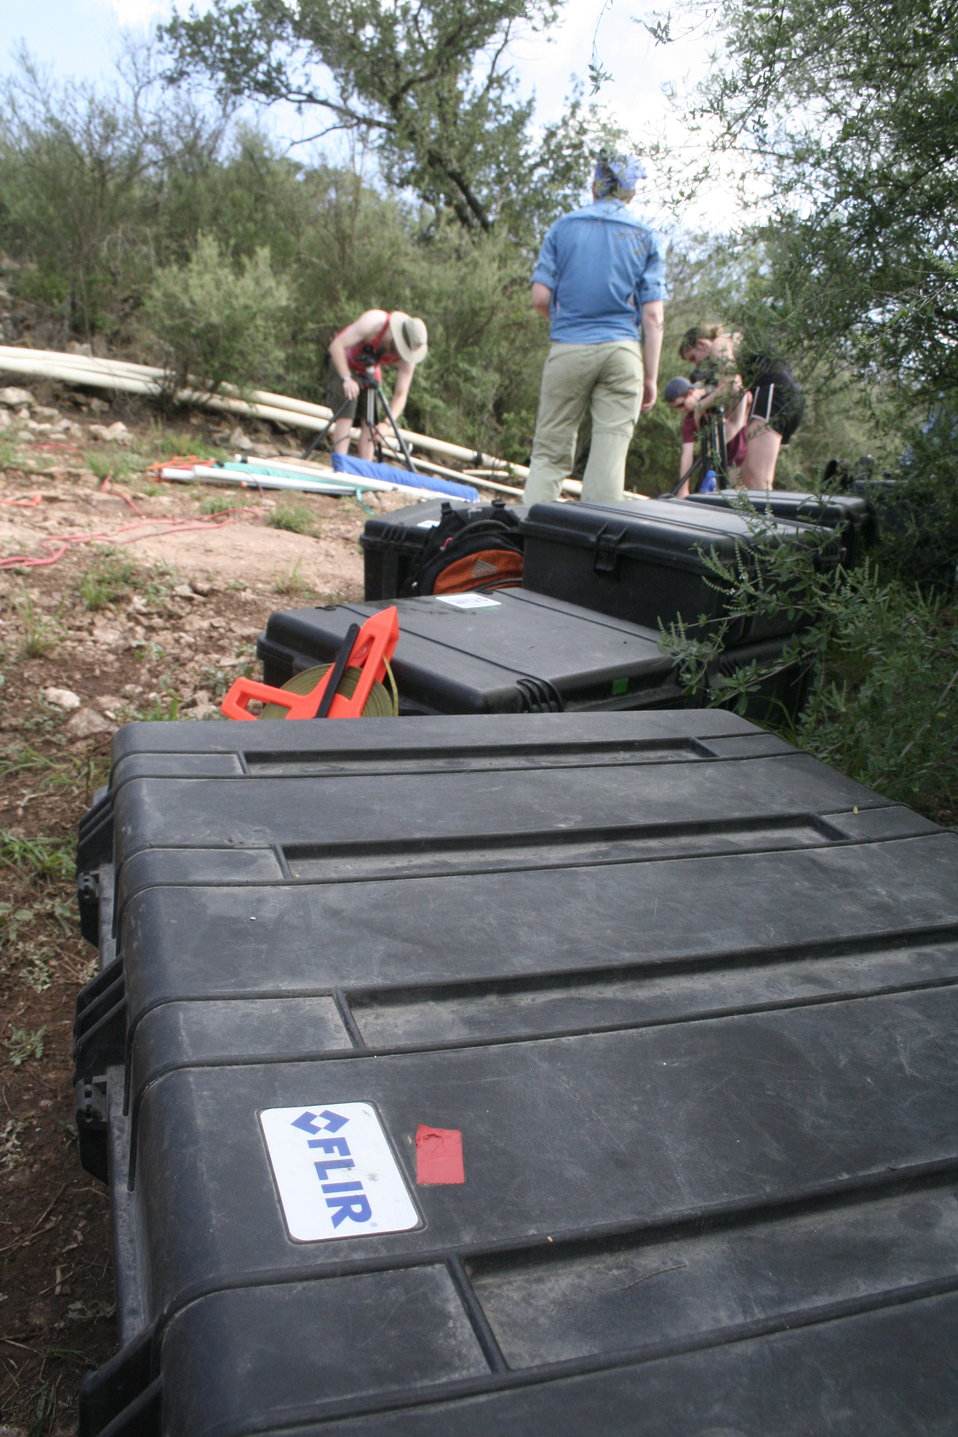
Cases with electronics